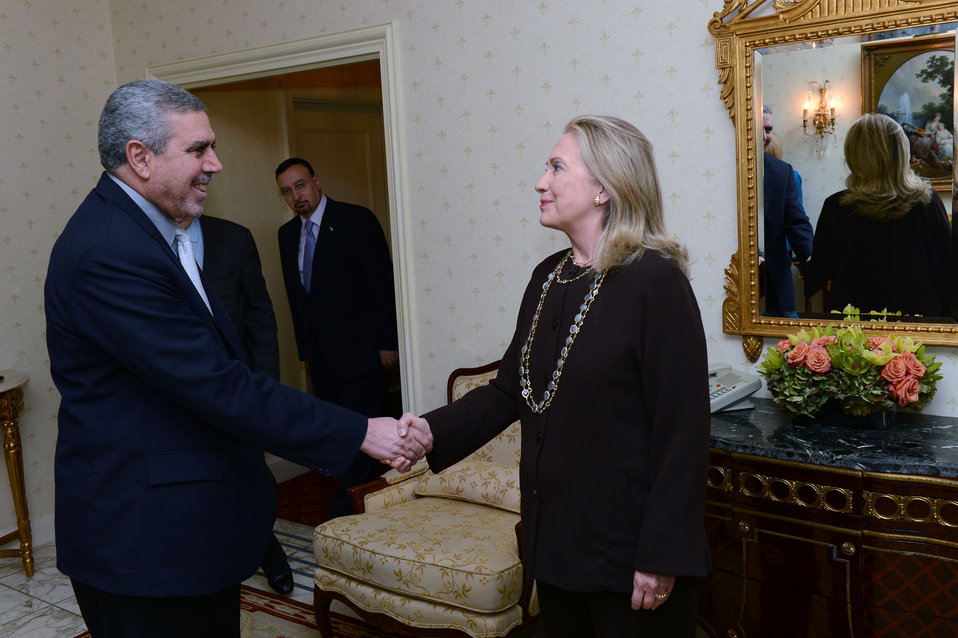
Secretary Clinton Meets With Vice President of Iraq al-Khuzai

U.S. Secretary of State Hillary Rodham Clinton meets with Vice President of Iraq Khudayr Musa Jafar Abbas al-Khuzai in New York, New York on September 25, 2012.